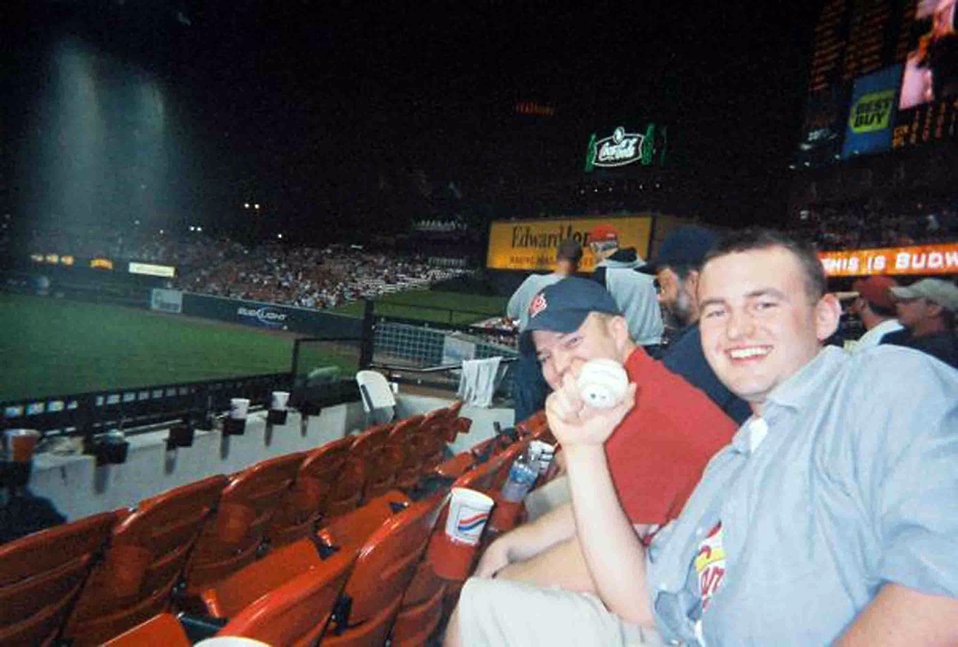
Lieutenant catches Griffey's 564th home-run ball

Second Lieutenant Christopher Franks shows off the 564th home-run ball of Ken Griffey Jr April 24 at Busch Stadium in St. Louis. The home run broke the tie with Reggie Jackson for 10th place on the baseball career list. Lieutenant Franks is assigned to the 20th Operations Support Squadron at Shaw Air Force Base, S.C.